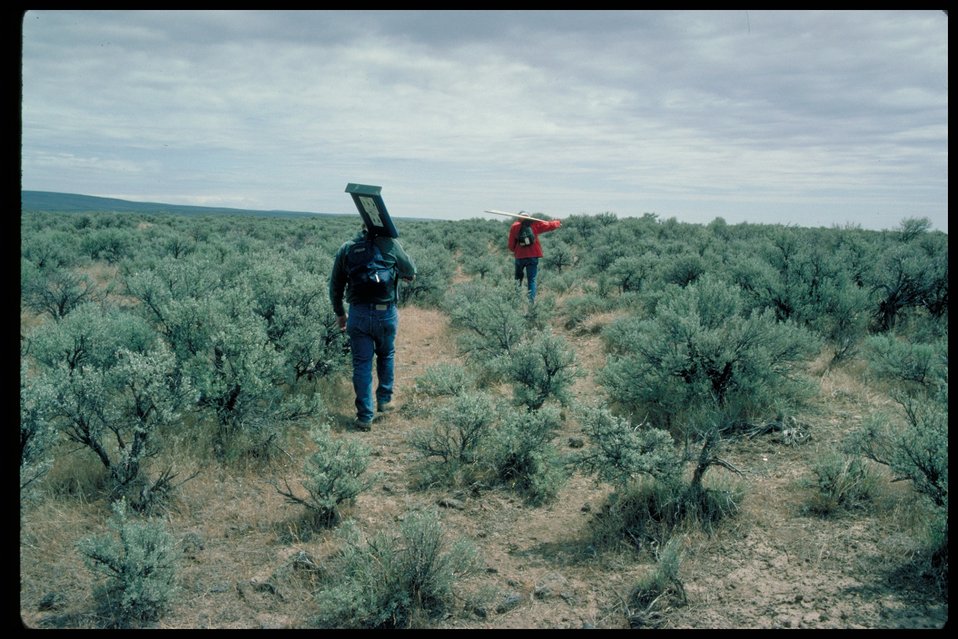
Oregon Trail east of Alkali Creek Lower Snake River District